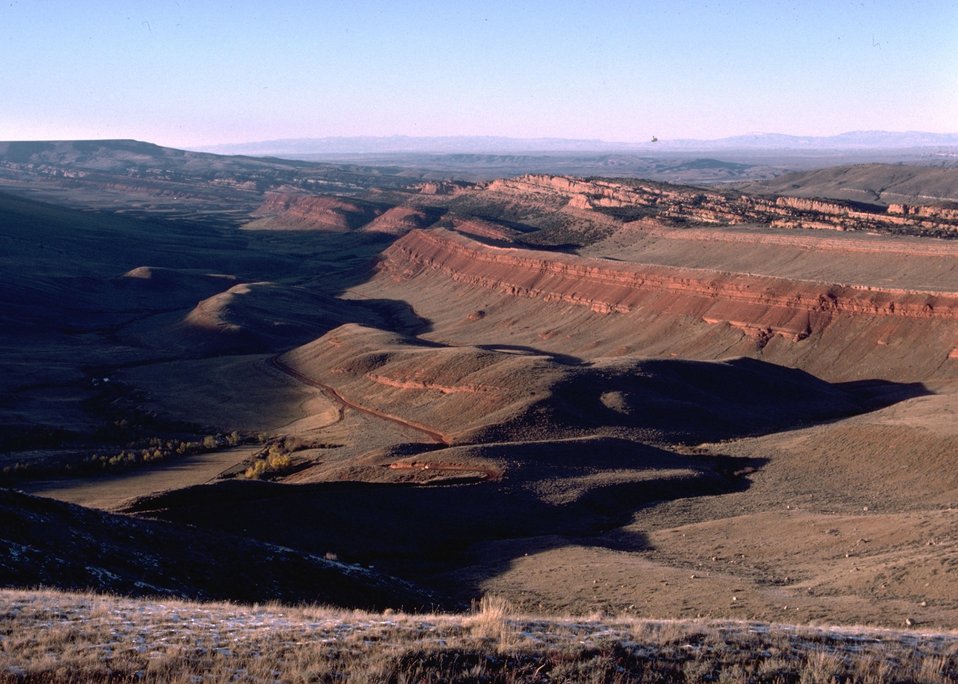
View of Red Canyon.